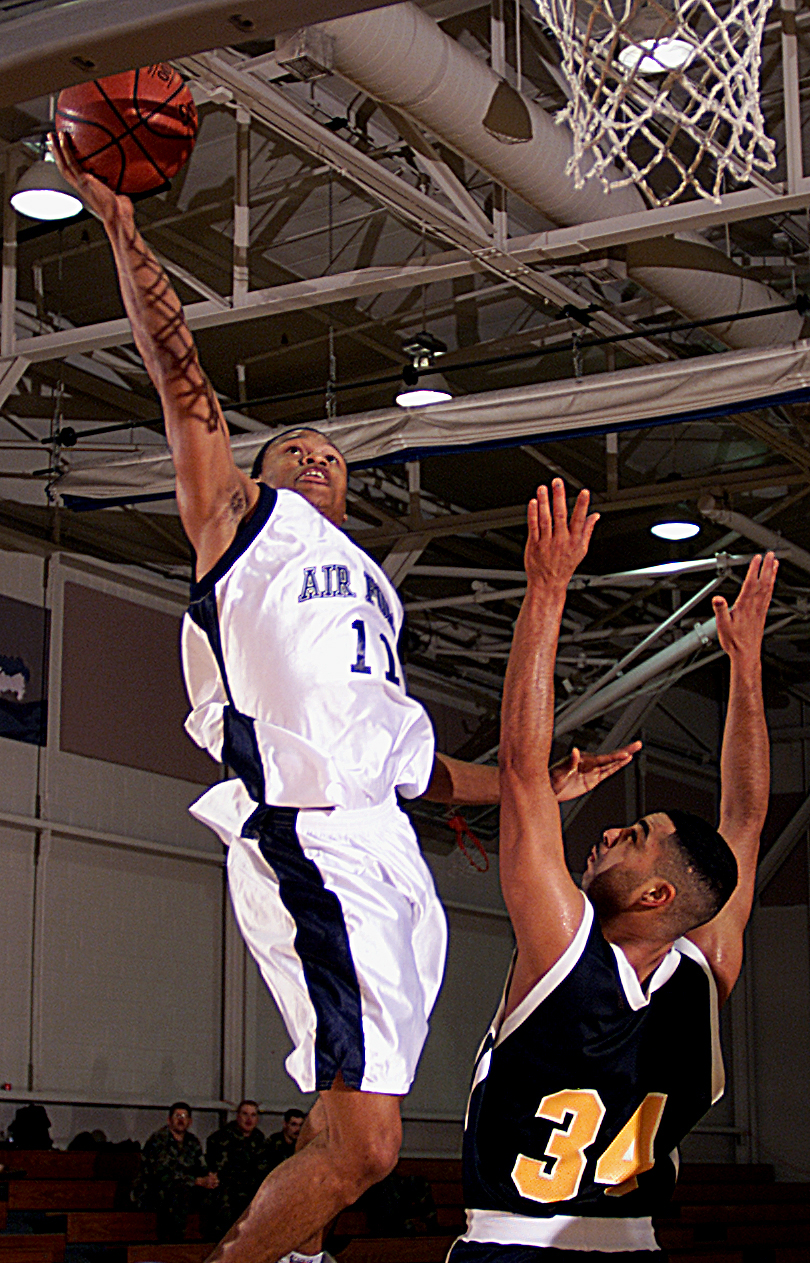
B-ball 2000

FILE PHOTO -- The 2000 Armed Forces Basketball Tournament. Air Force Guard Eddie Dawkins (left) beats Navy's Warren Hargrove for a lay-up.